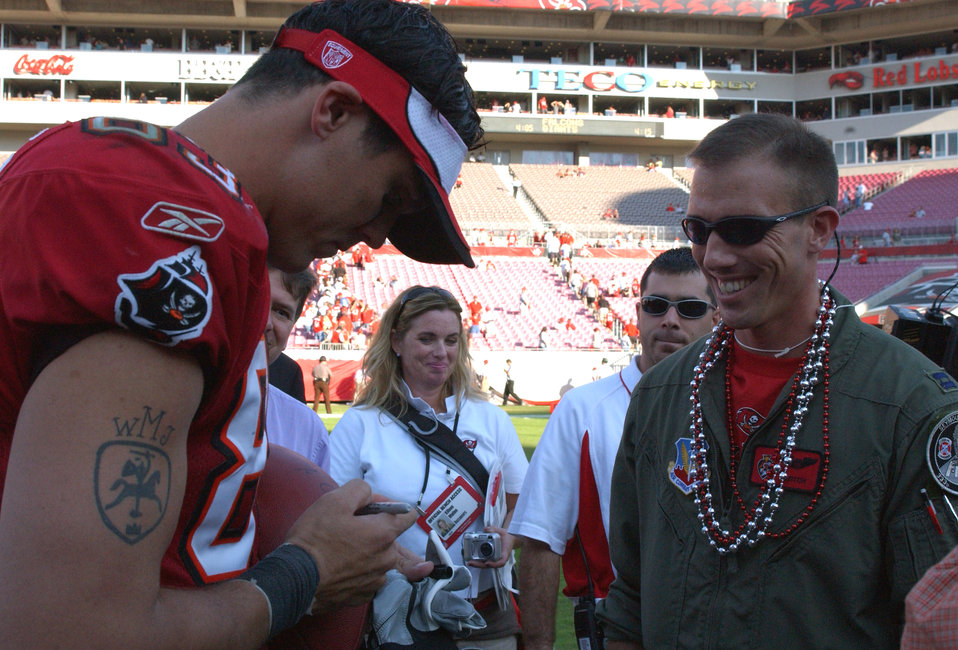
Pilot receives ball, honor from NFL football player

TAMPA, Fla. -- Tampa Bay Buccaneers wide receiver Joe Jurevicius autographs a game ball for Capt. Ryan Silver, a pilot from the 89th Flying Training Squadron at Sheppard Air Force Base, Texas. Captain Silver was part of the ground control team that guided a flyover that his twin brother, Capt. Bryce Silver led over the stadium here during the opening ceremony. The brother is assigned to the 333rd Fighter Squadron at Seymour Johnson AFB, N.C.